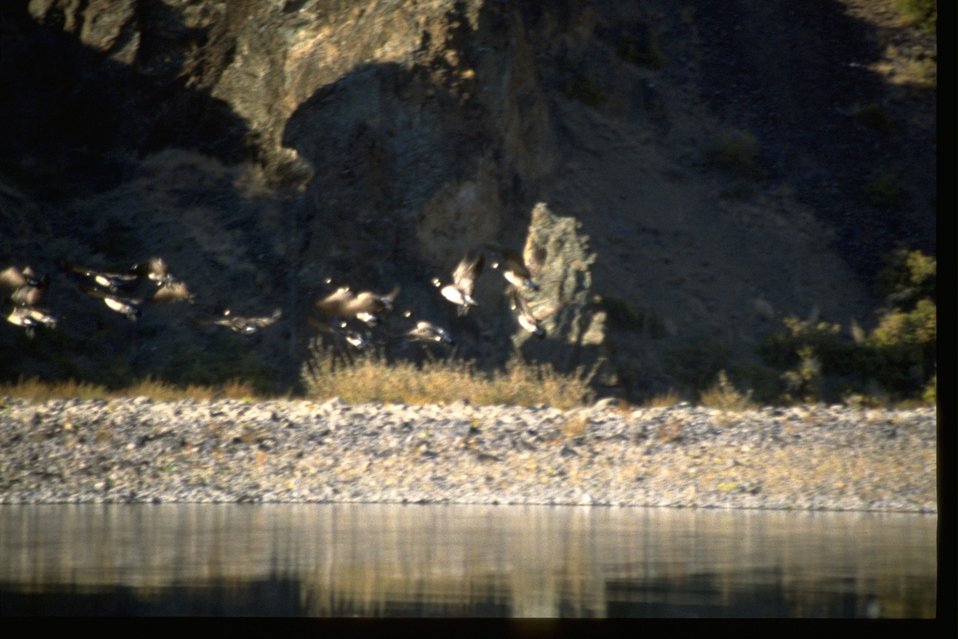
Geese taking off from rocky shore of the John Day River.